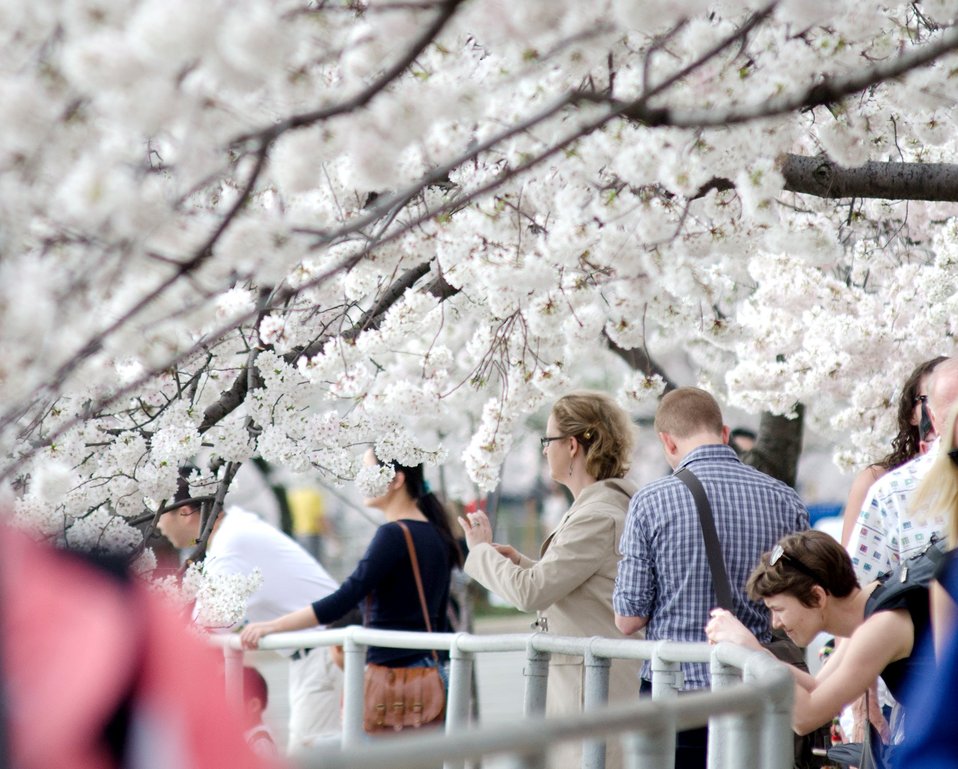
Cherry blossoms at the Tidal Basin in Washington, D.C., on Tuesday, March 20, 2012.